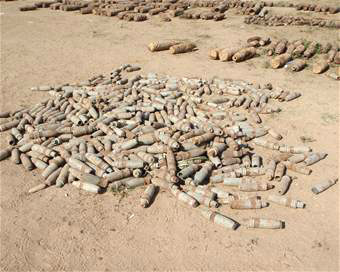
Sather Airmen destroy weapons cache

Explosive devices await destruction by explosive ordnance disposal specialists from the 447th Expeditionary Civil Engineer Squadron Explosive Ordnance Disposal Alpha Flight at Sather Air Base, Iraq. The weapons are part of a 13,000-pound cache destroyed by EOD Airmen from Sather AB.